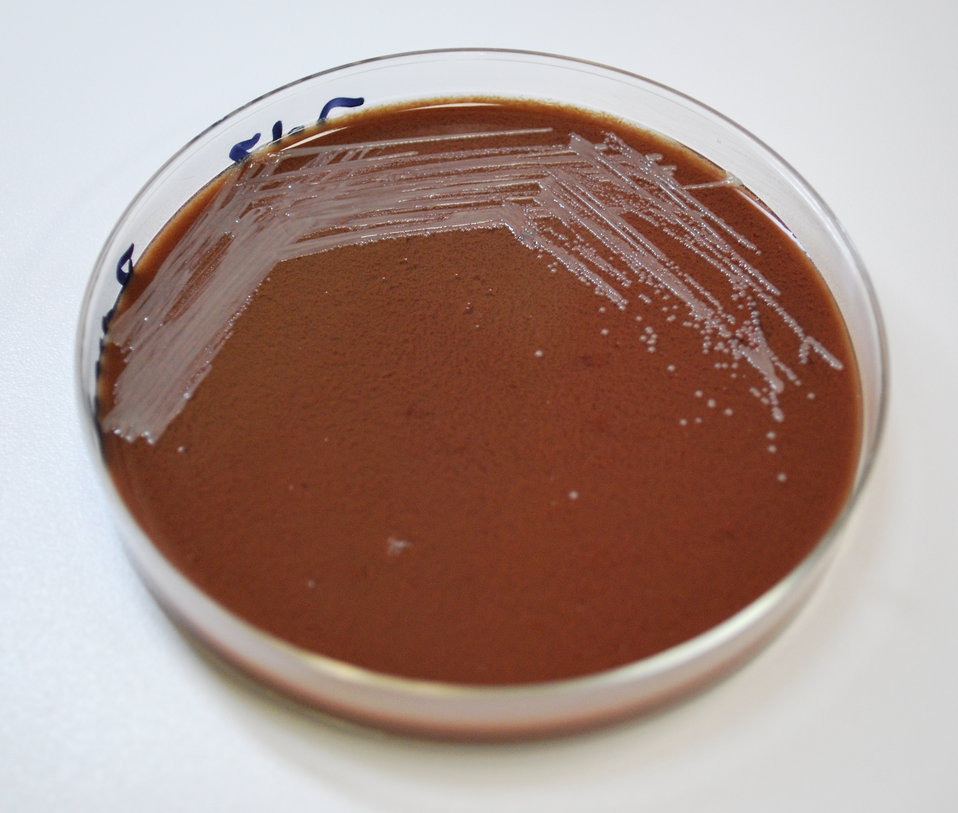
This image depicts the colonial morphology exhibited by colonies of Brucella abortus bacterial, which had been cultivated on chocolate agar, for a period of 72 hours.Infectious Agent